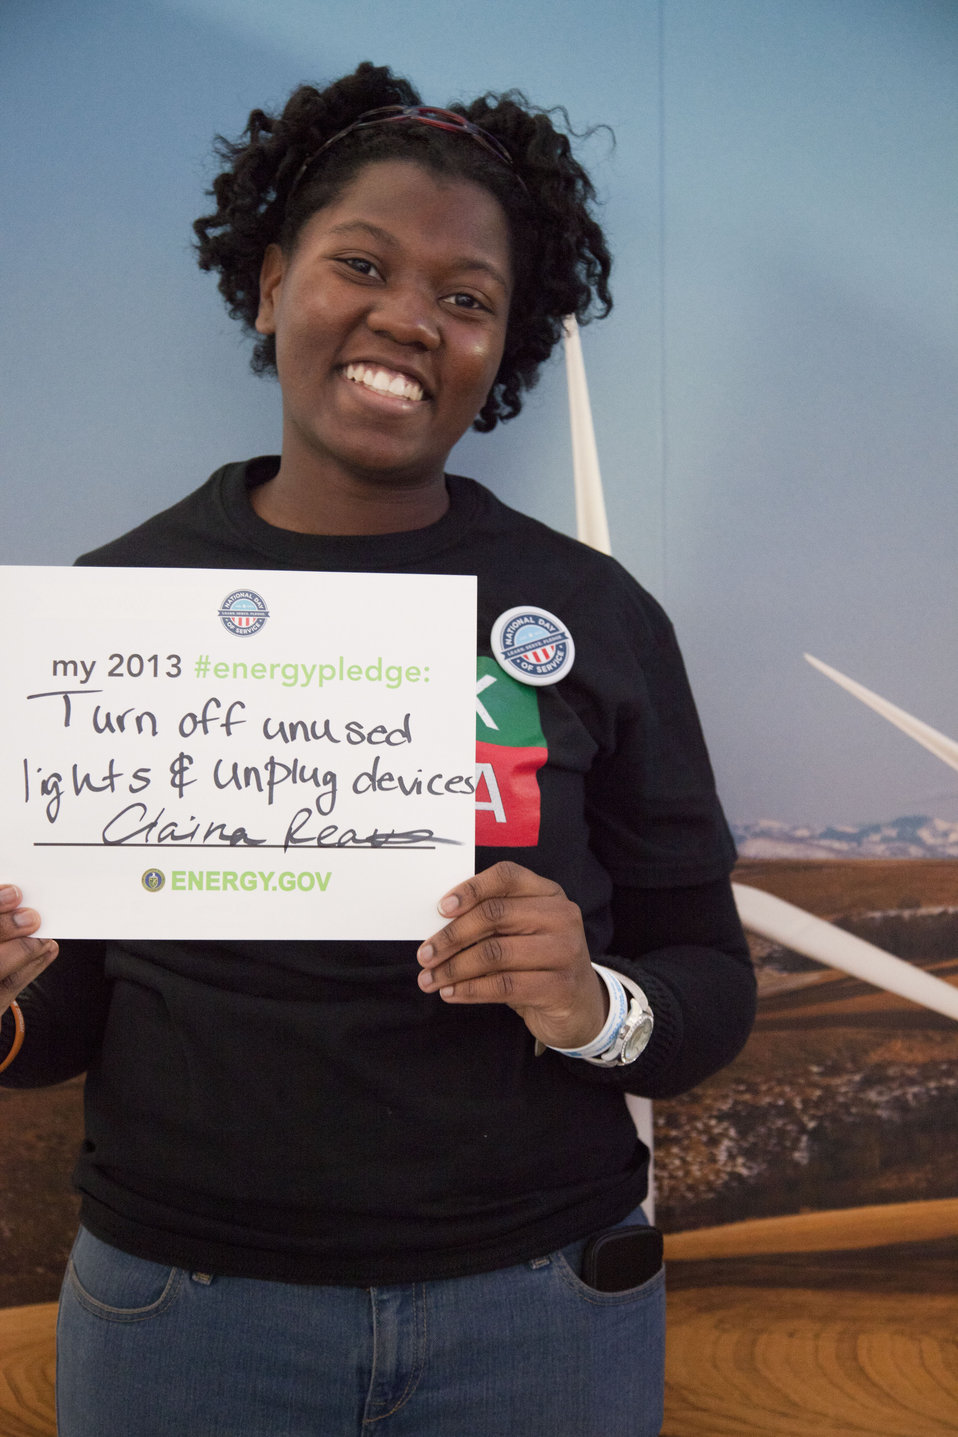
What's your #energypledge?